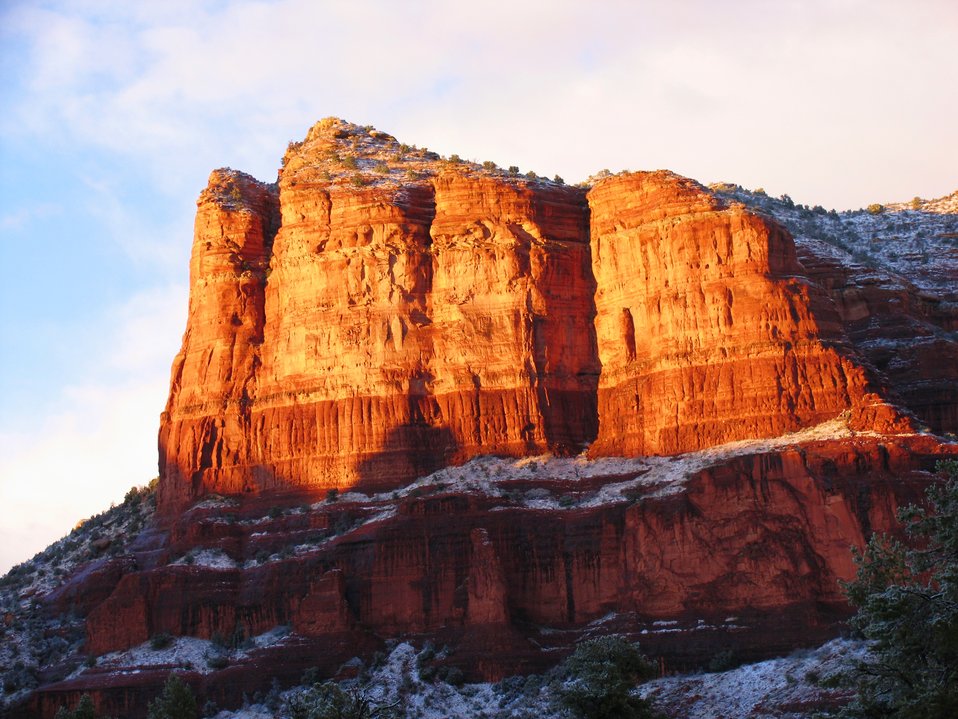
Late afternoon sun illuminates a red rock mesa with a dusting of snow.